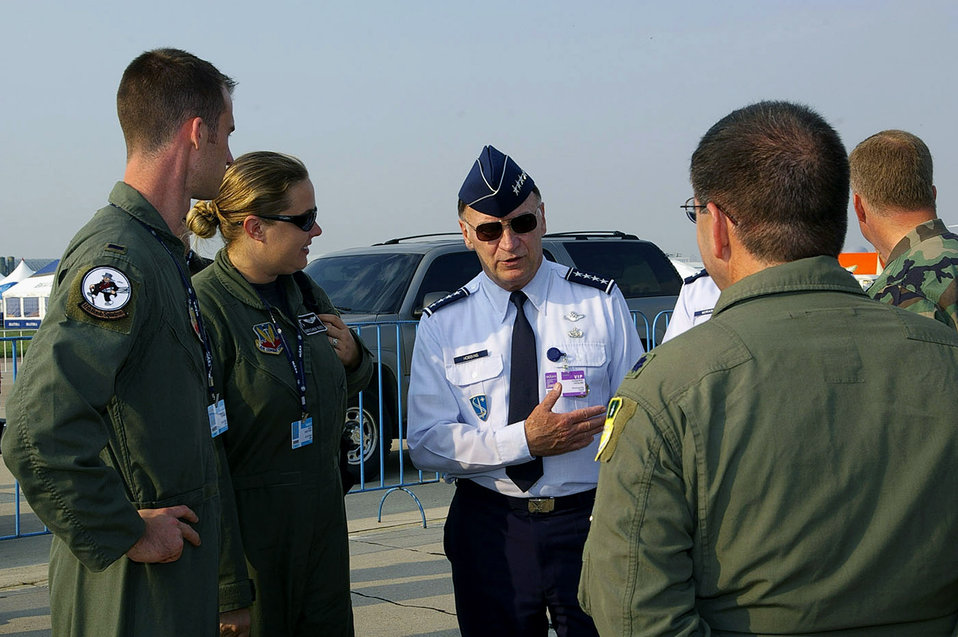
Airmen participate in Moscow International Air Show

1st Lt. Mike Middents (from left), Capt. Gretchen Dues and Lt. Col. Jeff Marcotte (far right) talk with Gen. William T. Hobbins during the opening day of the Moscow International Air Show Aug. 21 at Ramenskoye Airfield in Zhukovsky, Russia. The air show runs through Aug. 26 and includes Department of Defense participation of static displays and aerial flight demonstrations. General Hobbins is commander of U.S. Air Forces in Europe. The Airmen are from the 2nd Bomb Wing at Barksdale Air Force Base, La.